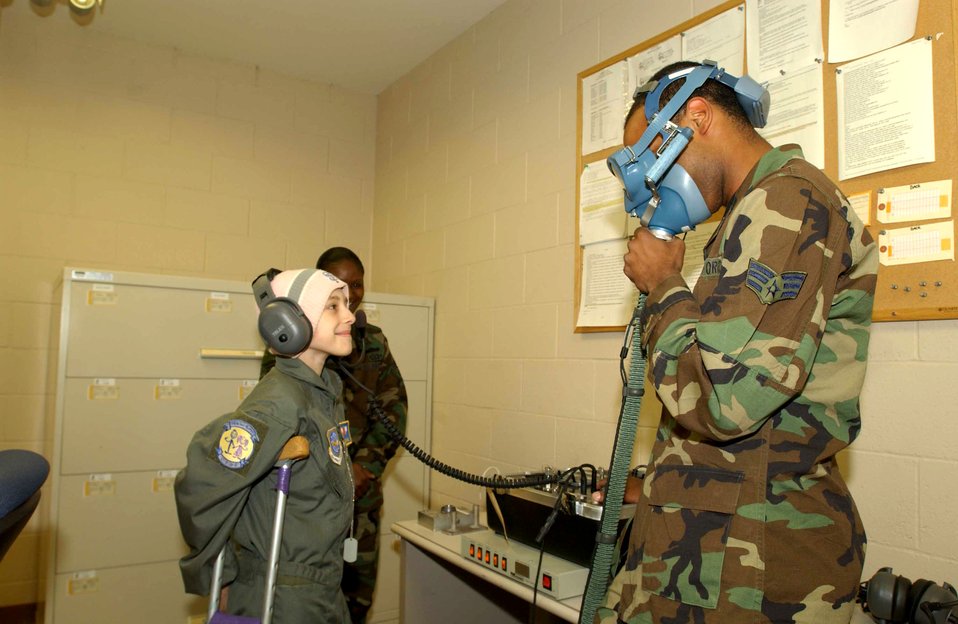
10-year-old girl spends day as KC-10 pilot

Ten-year-old Katie Powell visits the life support branch at Travis Air Force Base, Calif., as part of the Pilot for a Day program on Friday, May 19, 2006. The program provides wish-fulfillment opportunities to local children with life-threatening diseases. Katie is fighting Ewing's Sarcoma, a rare bone cancer. She is the daughter of Senior Master Sgt. Chris Powell, 60th Operations Group.